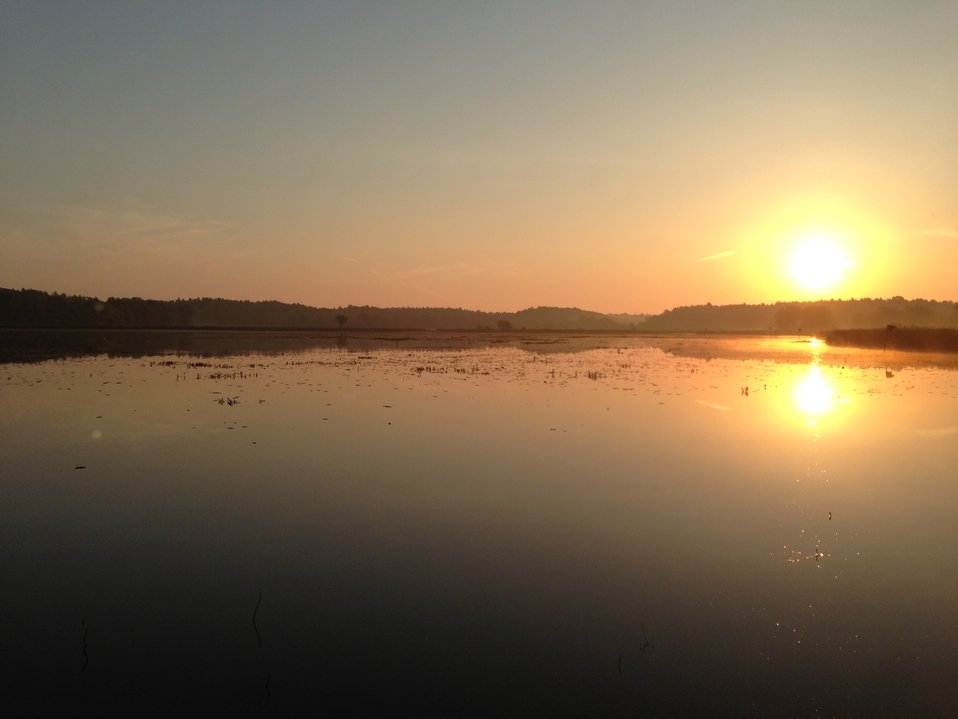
Marshbird Survey Sunrise

Sunrise, Great Meadows National Wildlife Refuge, Concord, MA

Credit: Steve Arena/USFWS

31 May 2013